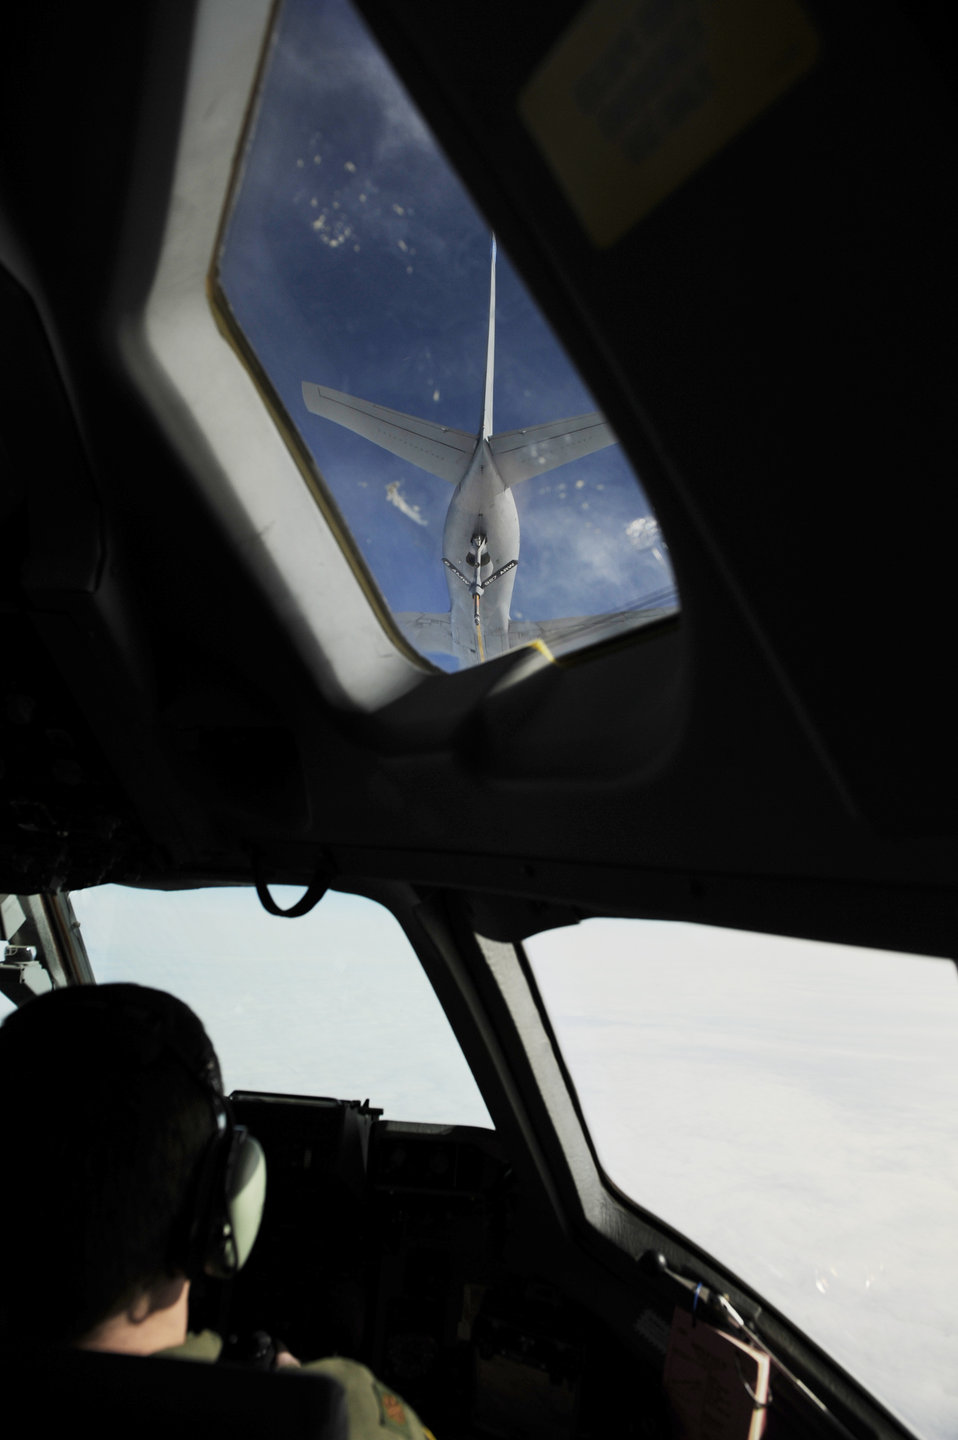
Charleston aircrew refuel near MacDill

Major Mark Laverne closes in on a KC-135 Stratotanker from MacDill Air Force Base, Fla., during a training mission March 12, 2010 aboard a C-17 Globemaster III. Major Laverne is from the 300th Airlift Squadron at Charleston AFB, S.C.